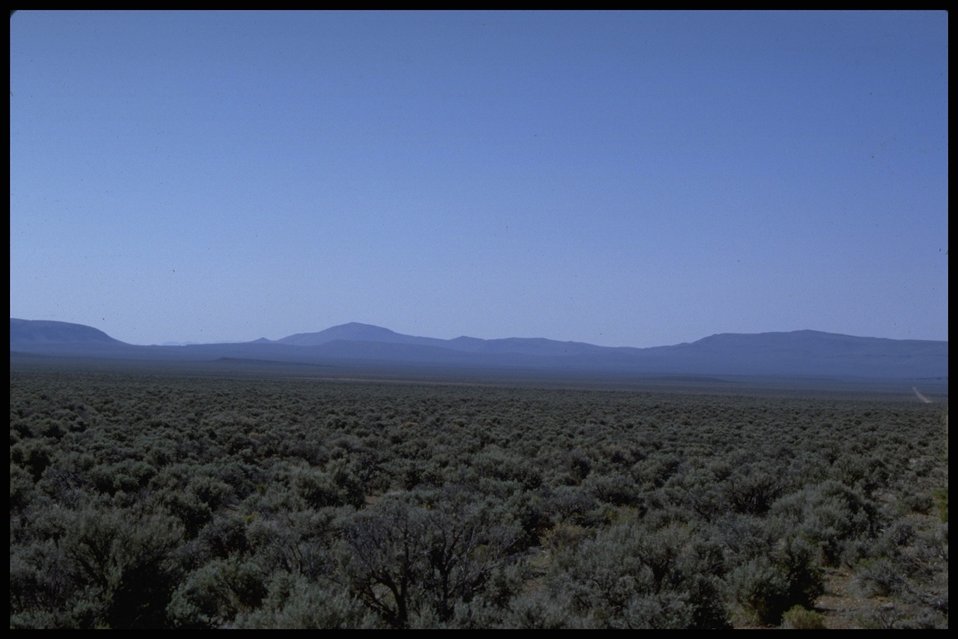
Scenic view South (or East) of Doharty.